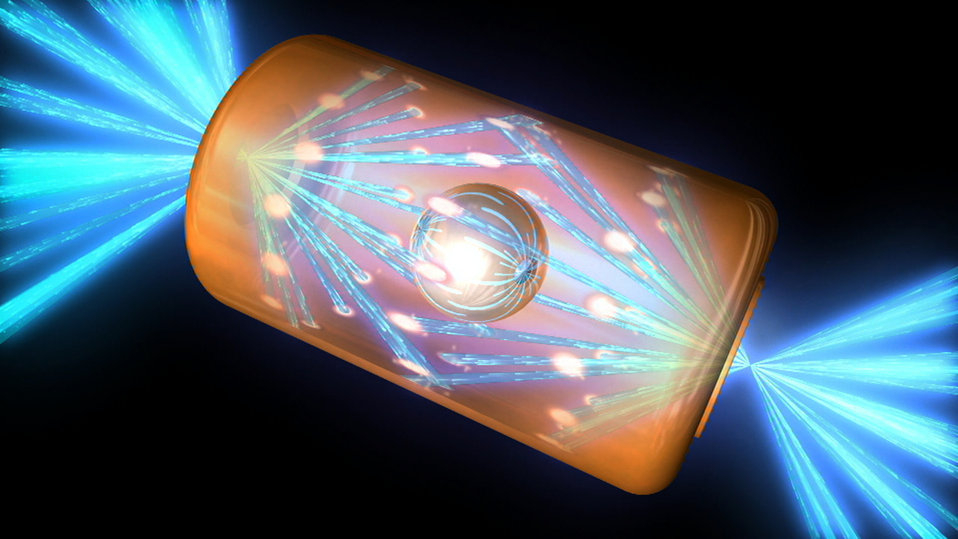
Shown is an artist's rendering shows a NIF target pellet inside a hohlraum capsule with laser beams entering through openings on either end. The beams compress and heat the target to the necessary conditions for nuclear fusion to occur. Ignition experiments on NIF will be the culmination of more that 30 years of inertial confinement fusion research and development, opening the door to exploration of previously physical regimes.